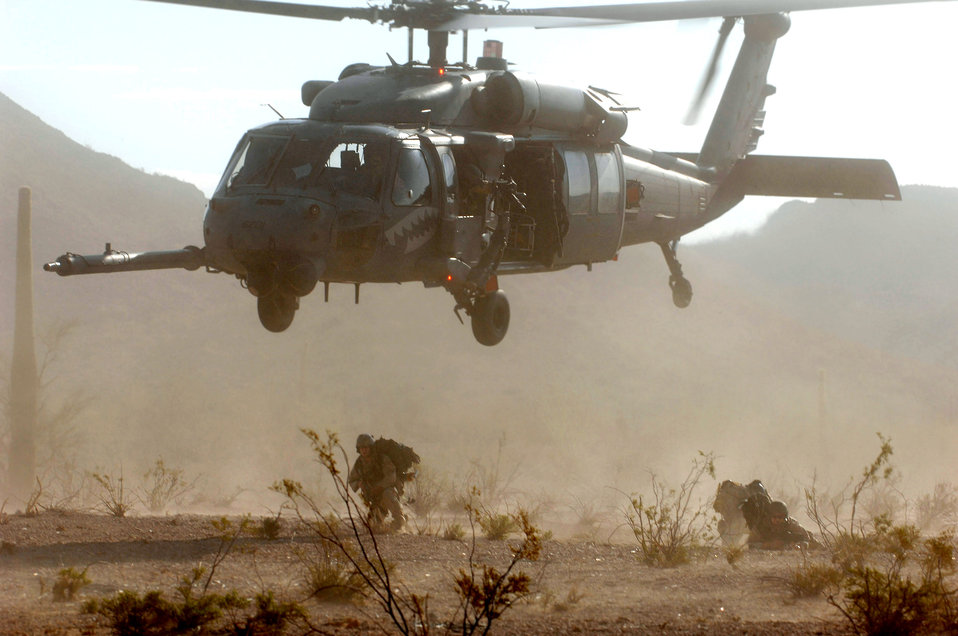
Securing the area

Pararescuemen secure an area after dropping out of an HH-60 Pave Hawk helicopter during Exercise Angel Thunder July 16 at Gila Bend, Ariz. The Airmen are from Davis-Monthan Air Force Base, Ariz.